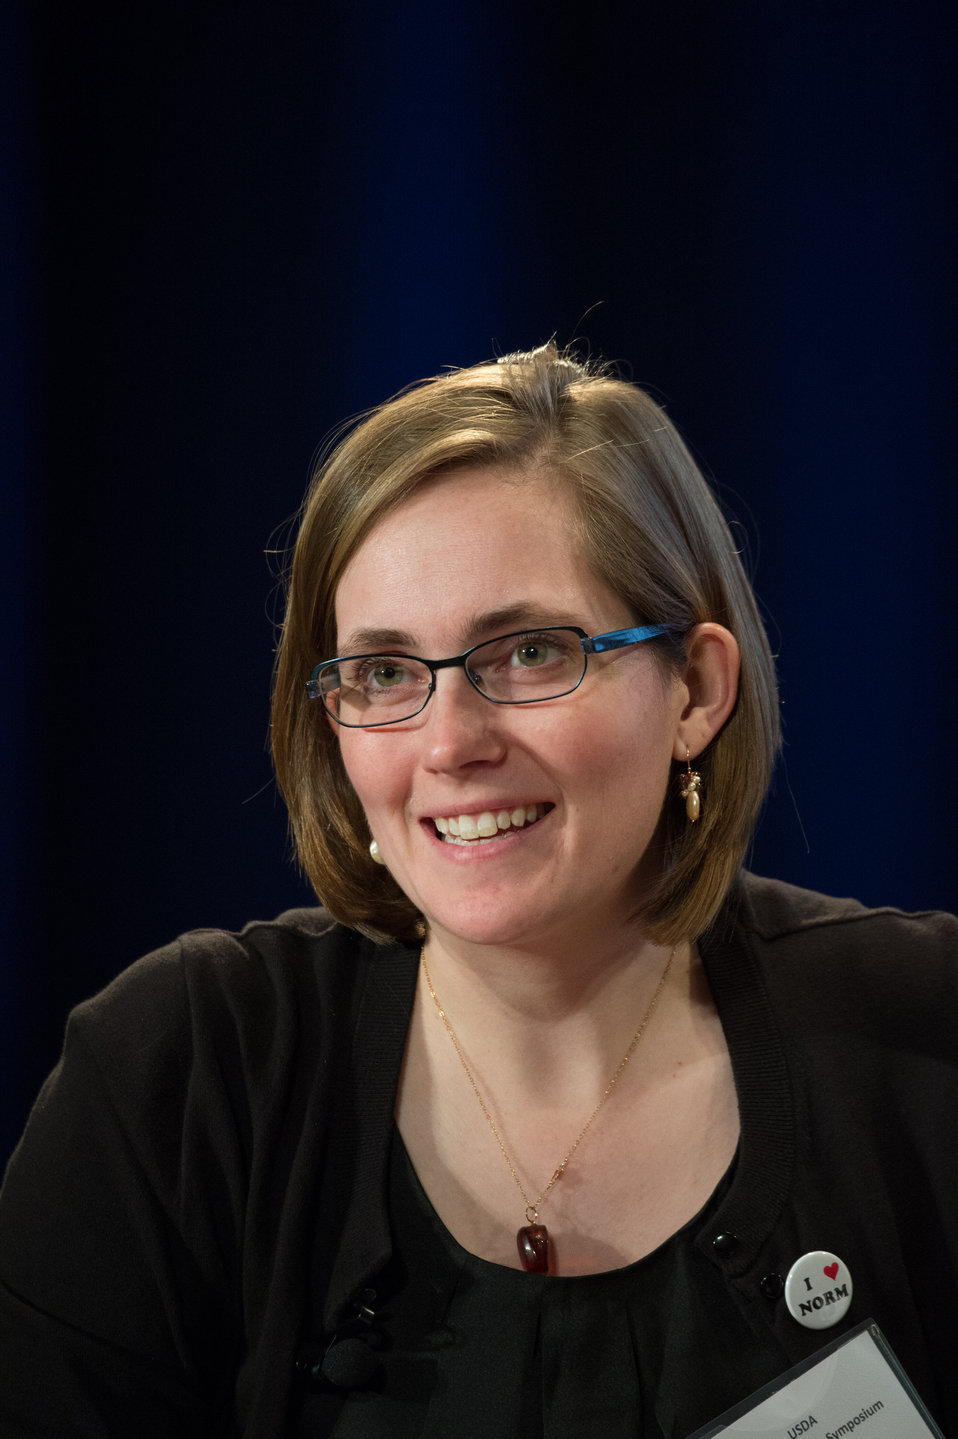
The World Food Prize Foundation Iowa and Midwest Education Programs Director Catherine Swoboda moderates the discussion panel titled 'I am Dr. Borlaug's Vision - I Can Make a Difference'; at the Borlaug Symposium commemorating the late Dr. Norman E. Borlaug's 100th Birthday hosted by the U. S. Department of Agriculture (USDA) in the Jefferson Auditorium of USDA in Washington, D.C. on Tuesday, Mar. 25, 2014. The symposium highlighted current efforts addressing global hunger.